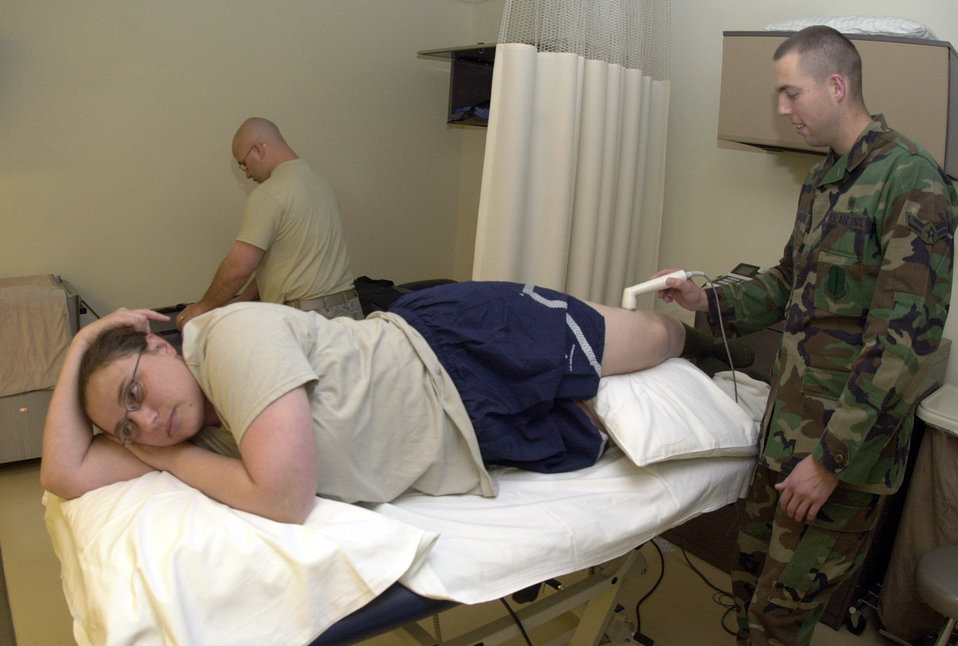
What physical therapy can do for you

Airman 1st Class Sean Devereaux performs physical therapy via ultrasound on an injured knee ligament of Capt. Lara Kalin-Cristofori Oct. 29 at the 17th Medical Group Clinic at Goodfellow Air Force Base, Texas. Airman Devereaux is a 17th Medical Support Squadron physical therapy journeyman.